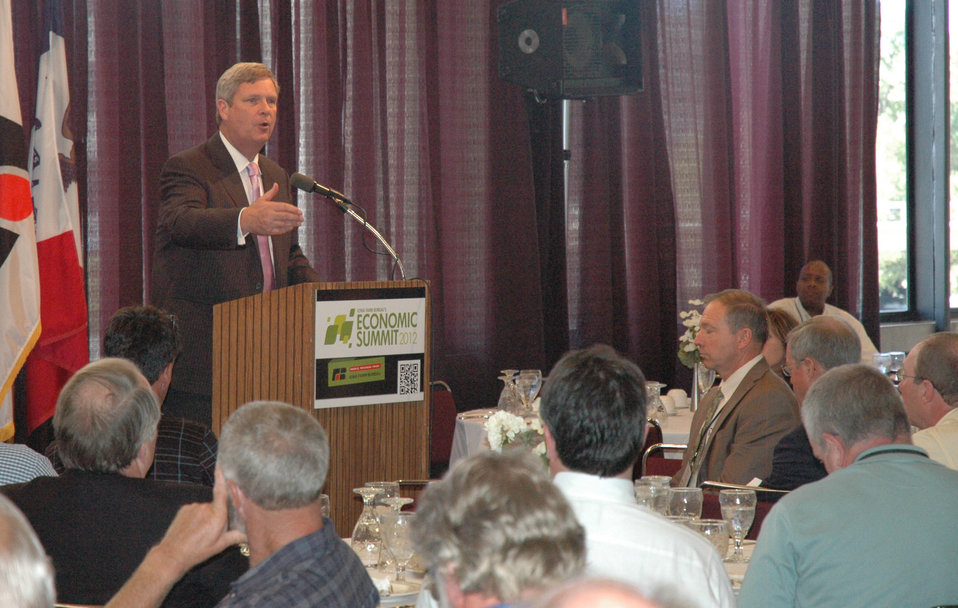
Agriculture Secretary Tom Vilsack addressed more than 200 attendees at the Iowa Farm Bureau’s 2012 Economic Summit meeting in Ames, Iowa, on Tuesday, July 24, 2012. The Secretary talked about pillars that are vital to the revitalization of rural America including the role production agriculture plays in expanding ag exports, the growth of the bio-based economy, the expansion of local and regional food systems and how conservation programs can enhance outdoor recreation activities.